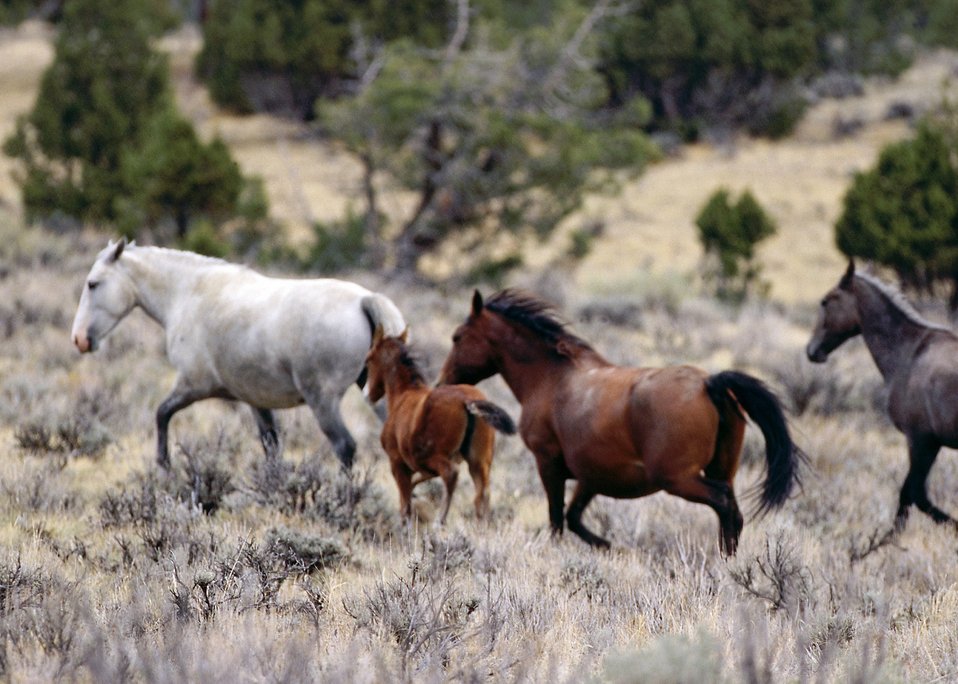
Horses